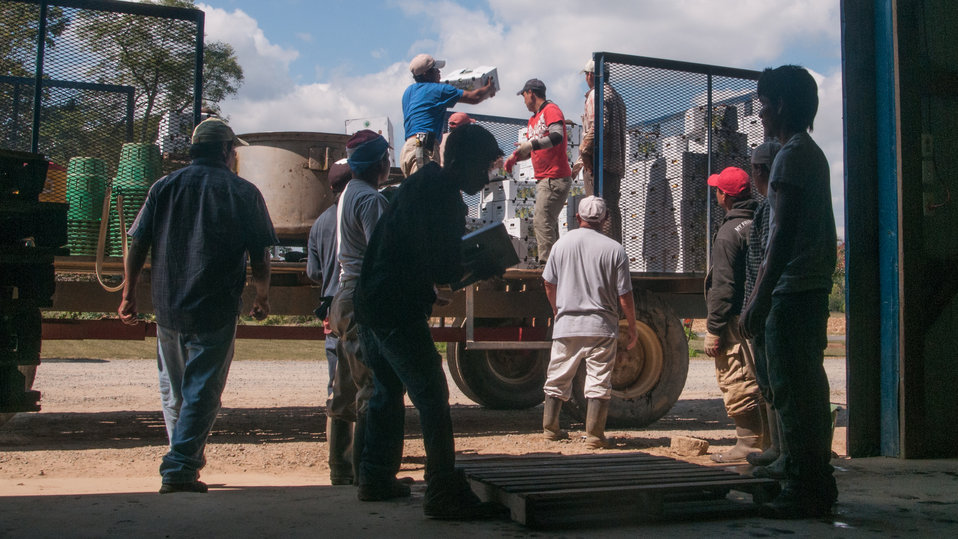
Migrant workers unload just picked, rinsed and packed green zucchini squash, at Kirby Farms in Mechanicsville, VA on Friday, Sept. 20, 2013. Kirby Farms devotes 200 acres of the farm to eggplant, spinach, beets, tomato, jalapeno peppers, melons and a variety of greens. Soybeans and small grain are grown on the remaining 300 acres. The fertile Virginia soil and their management practices, allows Kirby Farms to double and triple crop fields with rotational crop selection. Wholesalers, who buy from this farm, sell the produce to major supermarkets in the Mid-Atlantic region, from North Carolina to Maryland. Restaurateurs in the local area prepare and serve their harvest to patrons in the Greater Richmond Region.